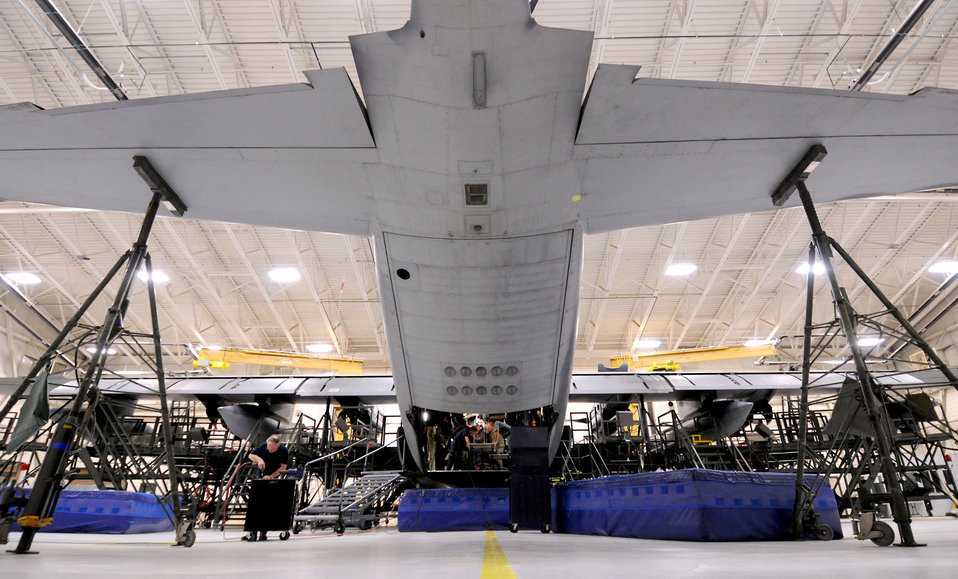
Loadmaster seat

An HC-130P Combat King sits on aircraft jacks as engineers and technicians develop the Air Combat Command's first loadmaster crashworthy seat April 7, 2011, at Moody Air Force Base, Ga. Once the seat is tested and approved, it will be placed into the rest of the HC-130P aircraft fleet.